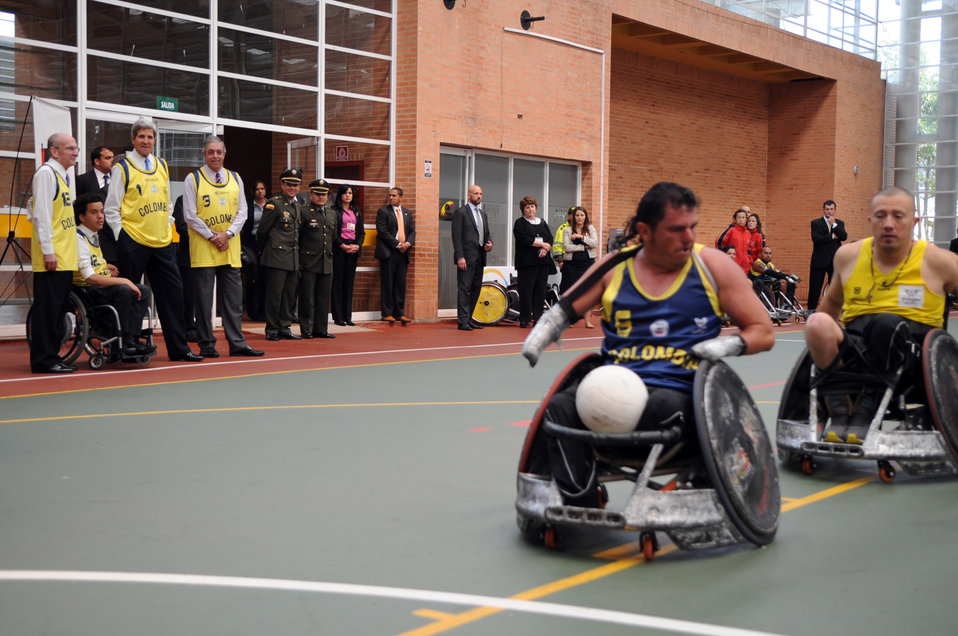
Secretary Kerry Watches a Colombian Wheelchair Rubgy Game

U.S. Secretary of State John Kerry, joined by Andres Botero, Director of the Coldeportes Center in Colombia, and Juan Pablos Salazar, President of Arcangeles, watches a wheelchair rugby game involving wounded law enforcement officers in Bogota, Colombia, on August 12, 2013.